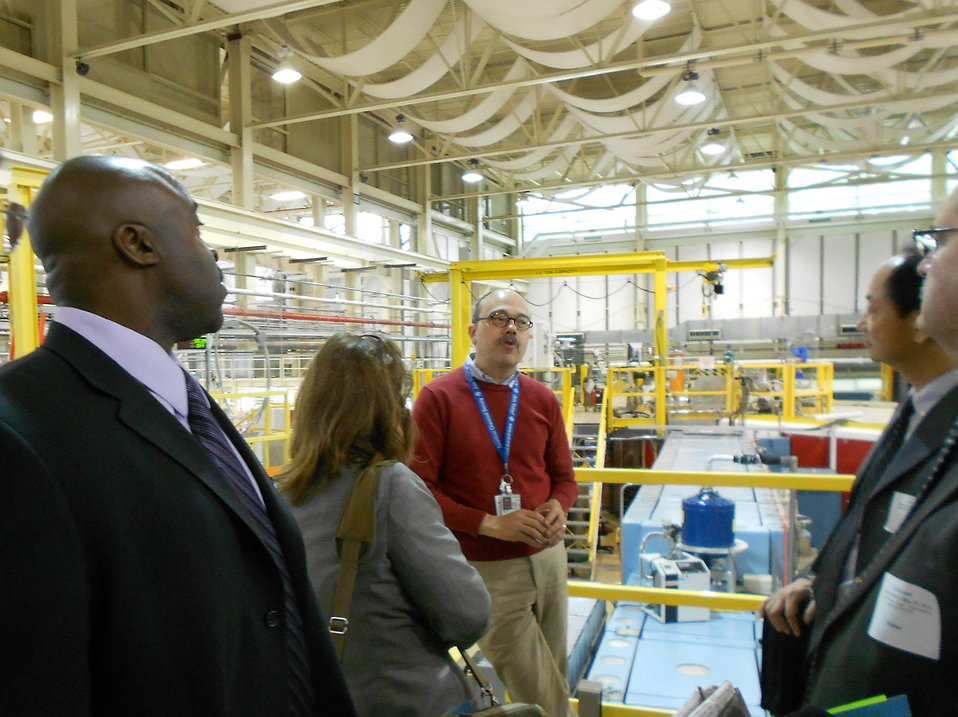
NCNR Tour

Dr. Dan Neumann (center), of NIST's Center of Neutron Research (NCNR) briefs University of California, Irvine Dean of Engineering Dr. Gregory Washington (far left) and his staff on research capabilities for users of the NCNR.